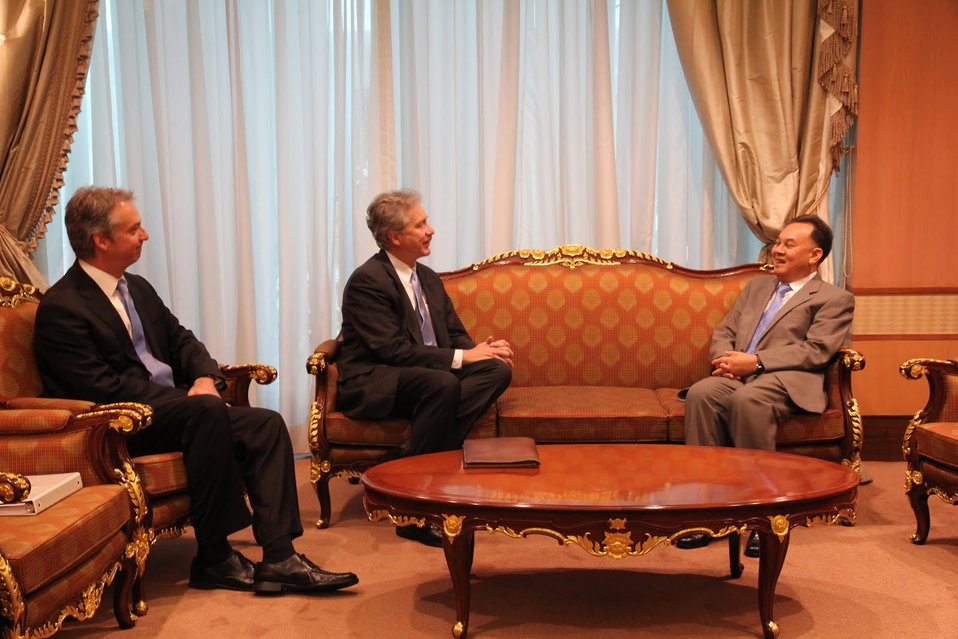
Under Secretary Burns, Ambassador John, and Thai Foreign Minister Kasit Piromya Participate in a Meeting

Under Secretary for Political Affairs William J. Burns and U.S. Ambassador to Thailand Eric G. John participate in a meeting with Thai senior government officials, including Thai Foreign Minister Kasit Piromya, at the Thai Ministry of Foreign Affairs in Bangkok, Thailand, on July 16, 2010.